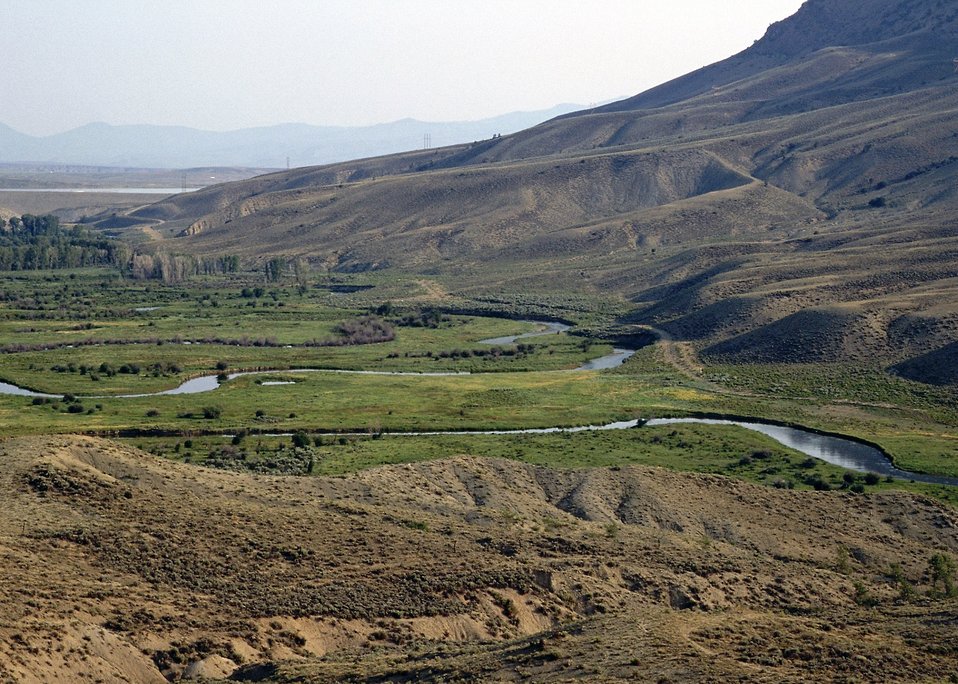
Wetlands Before Wolford